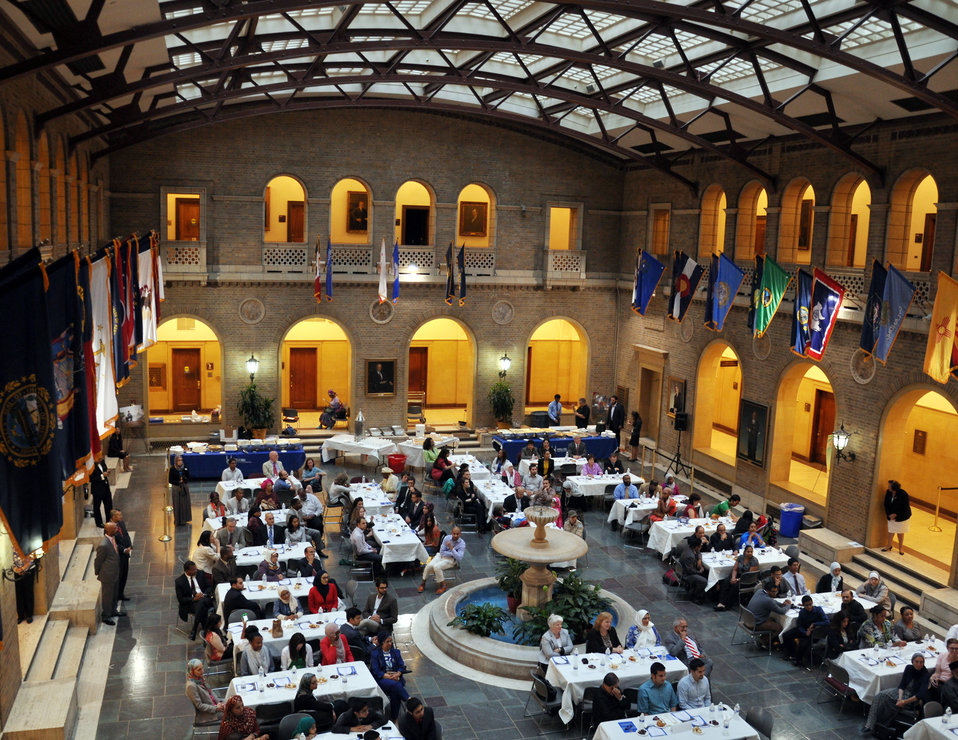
The U.S. Department of Agriculture (USDA) hosted its fifth annual Ramadan dinner on the USDA Whitten Building patio on Thursday, Aug. 1, 2013. For the second year in a row, Islamic Relief USA had the privilege of sponsoring the event’s dinner. Islamic Relief USA works with the USDA as well as numerous other organizations to help alleviate hunger. In one joint initiative with the USDA, IRUSA helps support community organizations across America that provide summer meals to low-income youth who rely on free or reduced-cost school lunches during the school year.